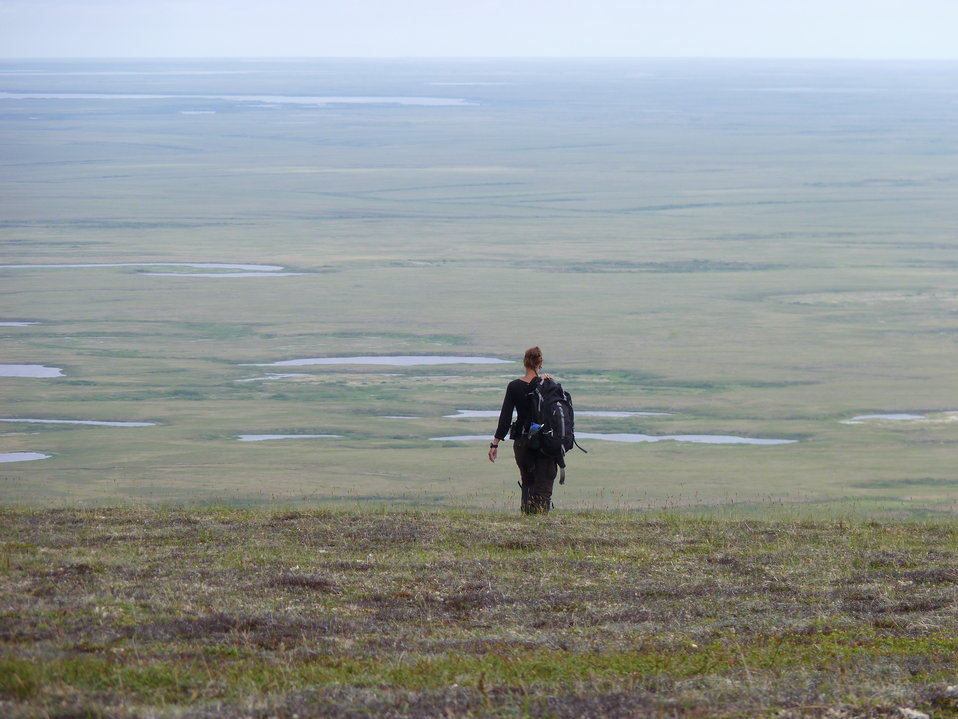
Andreafsky Wilderness, Yukon Delta National Wildlife Refuge